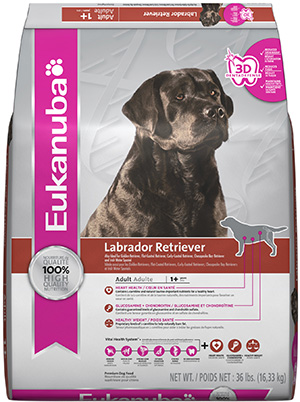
RECALLED – Dog and Cat foods - Dry

August 14, 2013 – Product Recall – P&G Voluntarily Recalls Limited Quantity of Dry Pet Food Due to Possible Health Risk.